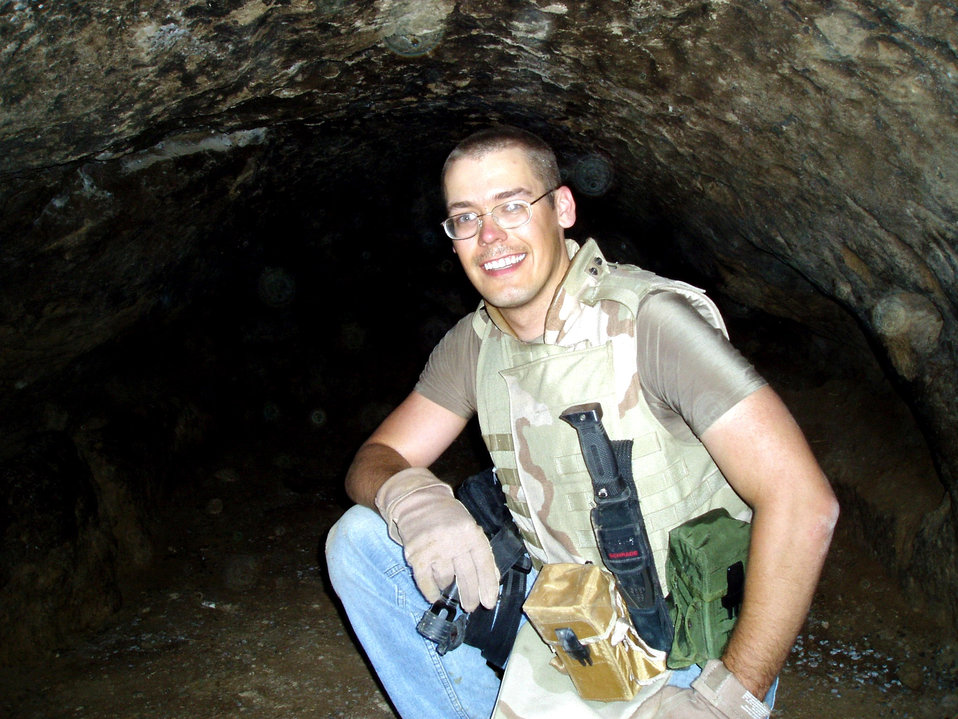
Mine explosion puts two Airmen on different paths to recovery

Staff Sgt. Chris Ramakka on cave patrol in Afghanistan.